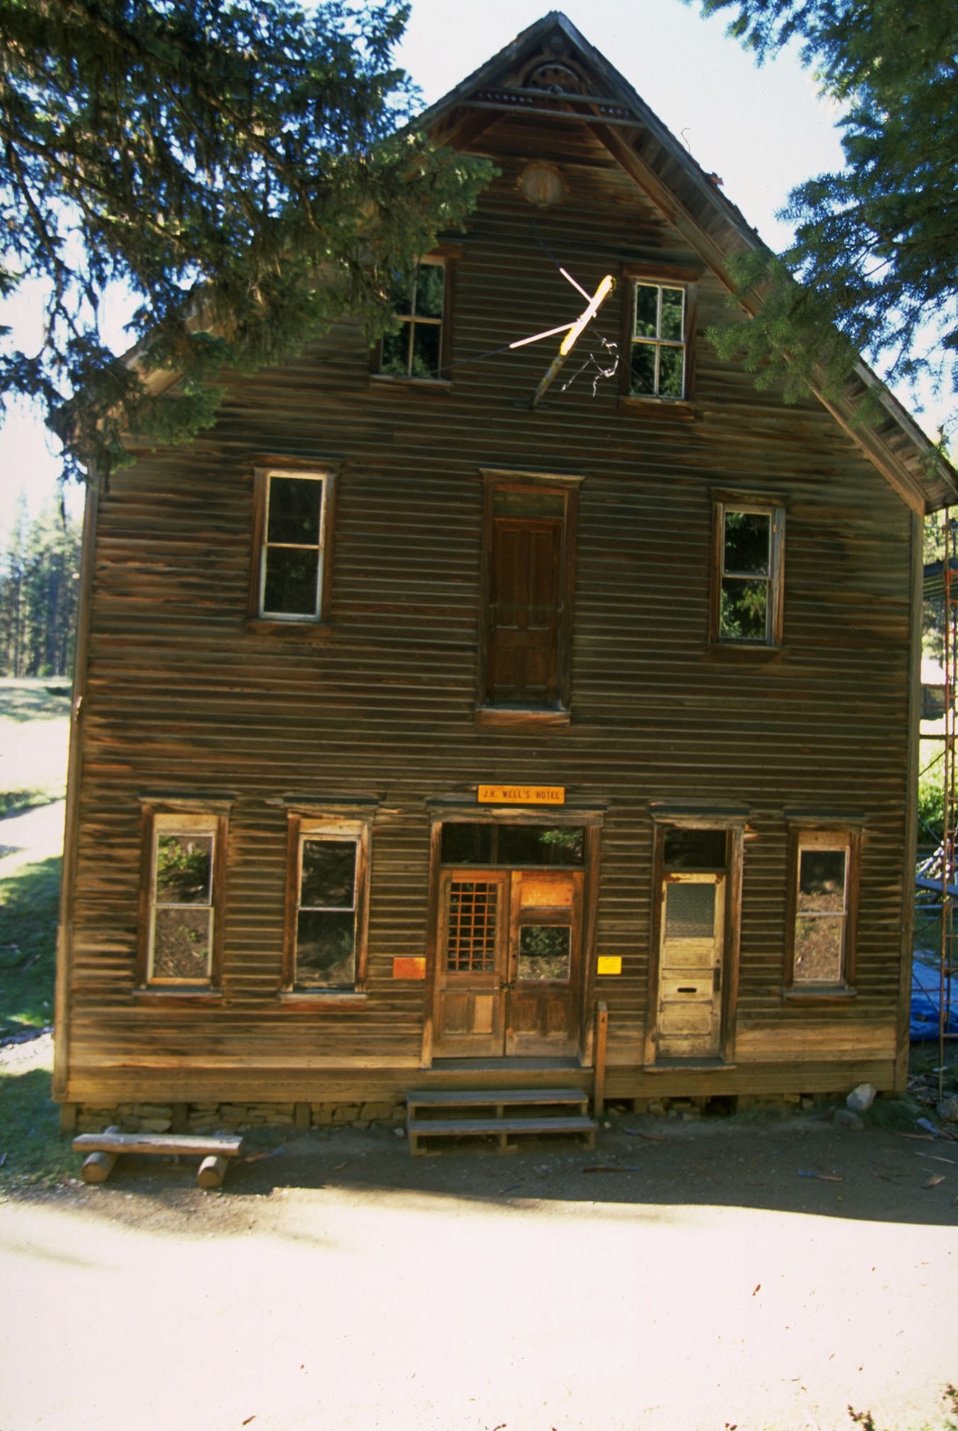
Garnet Ghost Town --Wells Hotel